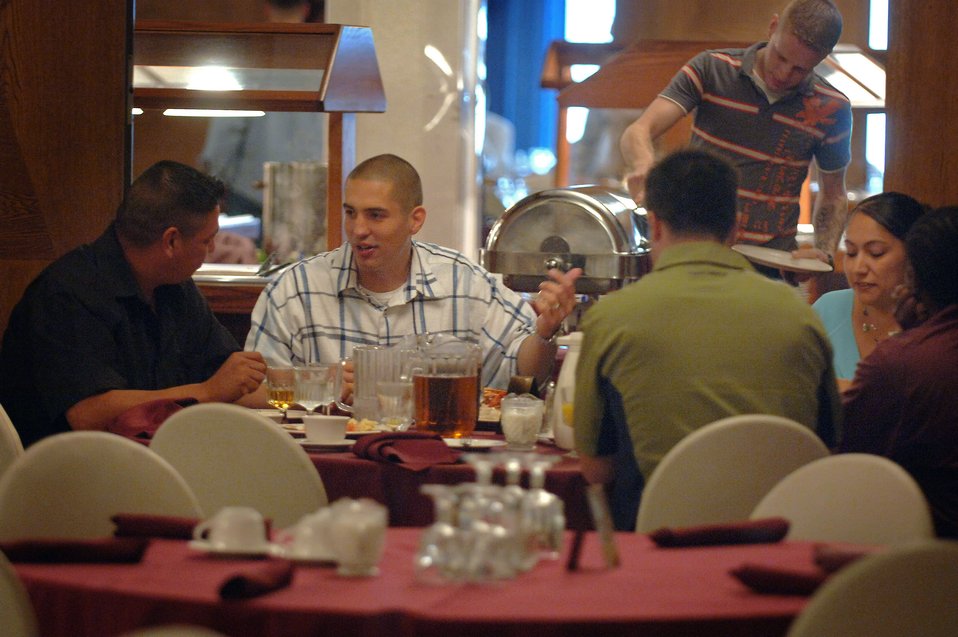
Volunteer organization lifts spirits of wounded veterans